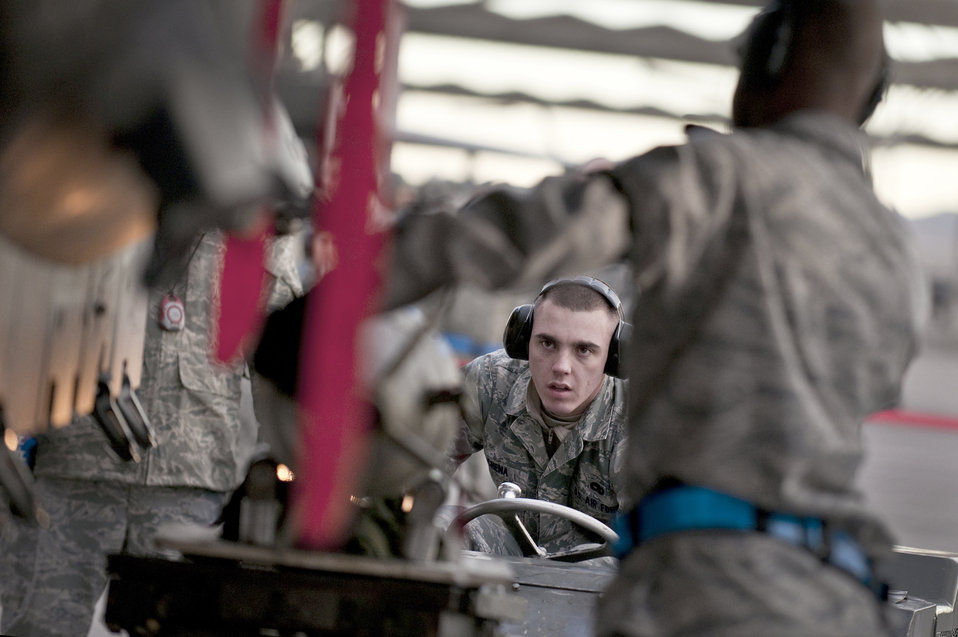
Nellis weapons load competition

Airman 1st Class Michael Schena uses an MJ-1 Jammer to position an MK-82 bomb on an F-15 Eagle during a weapons load competition Jan. 7, 2011, at Nellis Air Force Base, Nev. Weapons load competitions are conducted quarterly to keep Airmen sharp and recognize superior performers. Weapons load teams are evaluated for their use of the checklist, safety and overall speed. Airman Schena is an aircraft armament systems apprentice with the 757th Aircraft Maintenance Squadron.